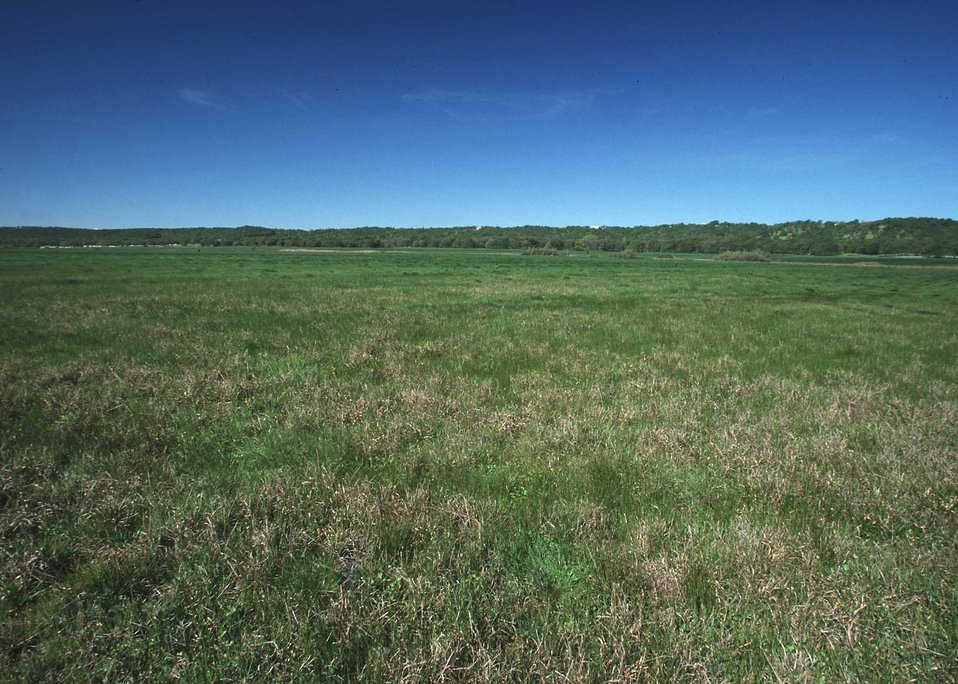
Vernal pool wetlands in northern California.